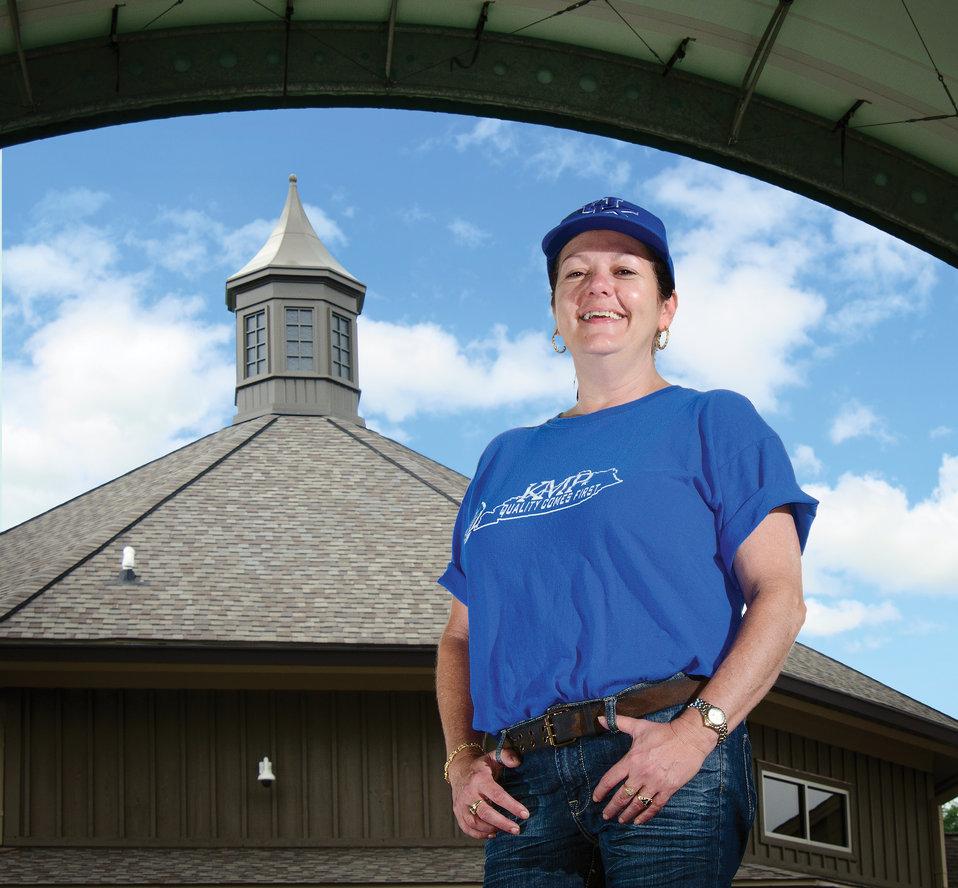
Bath County Agricultural Education and Marketing Center, Owingsville, KY, on Friday, July15, 2011. The Center was the recipient of a $400,000 Rural Business Enterprise Grant. It has given farmers and producers from Bath and surrounding counties the opportunity to manufacture and market their locally grown and locally produced value-added and “Kentucky Proud” branded products, including but not limited to, fresh produce, artisan crafts and specialty food products. The Center is open year-round and allow residents to sell products in four different retail categories, including Kentucky products, regional crafts, “green” groceries and bakery/deli. Several producers expressed their gratitude for Rural Development’s assistance in making the center a reality. The project was made possible through funding from the American Recovery and Reinvestment Act.